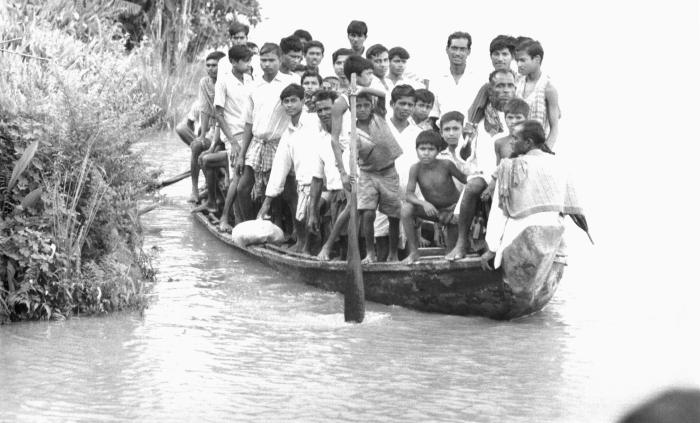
This image was part of a series provided by Dr. Stan Foster, and captured by Pierre Claquin, M.D., B.A.C., who at the time was a member of the World Health Organization's Smallpox Eradication Program. It was part of a series photographed by former E.I.S. officer, Stanley O. Foster M.D., M.P.H., and was one of a series entitled 'The Story of One Smallpox Jeep', which depicted the travails faced by the jeep, and its occupants of public health practitioners, as they road through the Bangladesh countryside in an attempt to eradicate smallpox from the country. Pictured here was a 'boat taxi', which was transporting what appeared to be a group of school boys returning to their homes after work.